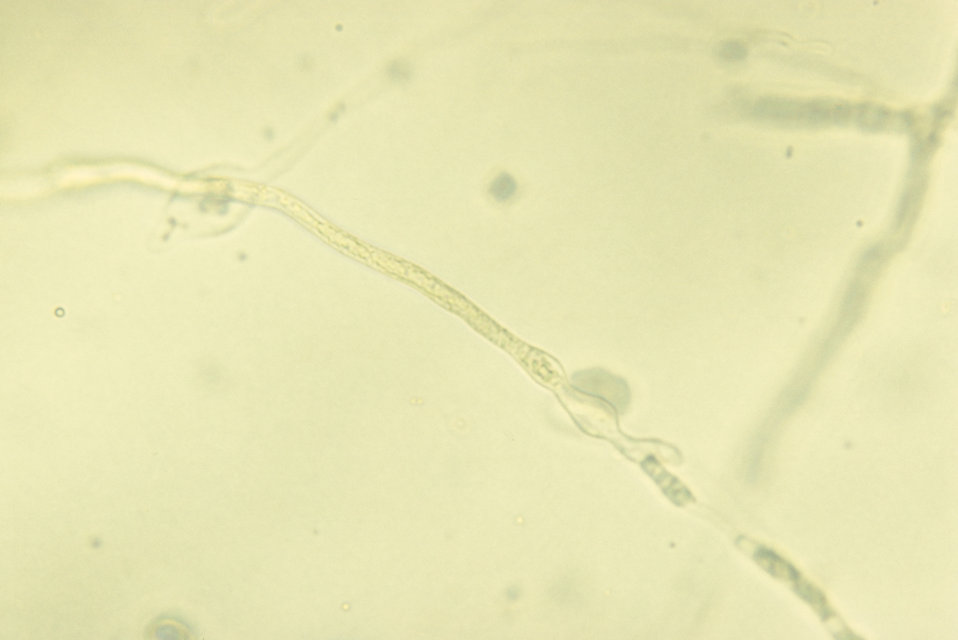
Note the resemblance between the algae Prototheca filamenta to a fungal organism due to its mycelia-like filaments.